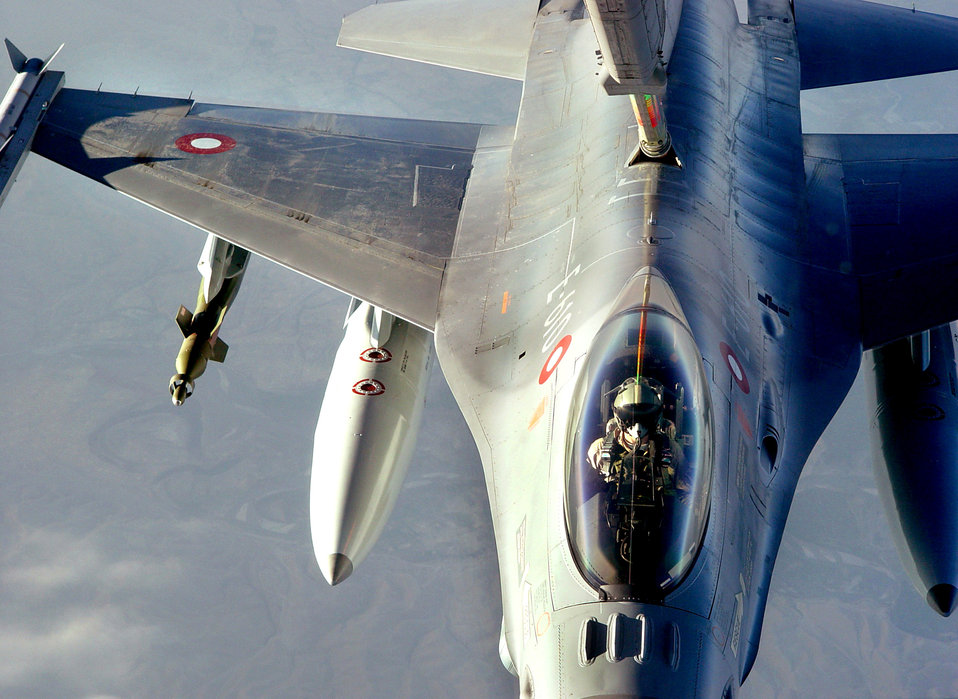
Coalition partners

OPERATION ENDURING FREEDOM -- A KC-10A Extender, deployed to the 380th Air Expeditionary Wing in Southwest Asia, refuels a Danish air force F-16 over Afghanistan. The F-16, operating from Ganci Air Base in the Kyrgyz Republic, is providing close air support to collation ground forces. The KC-10A’s home base is McGuire Air Force Base, N.J.